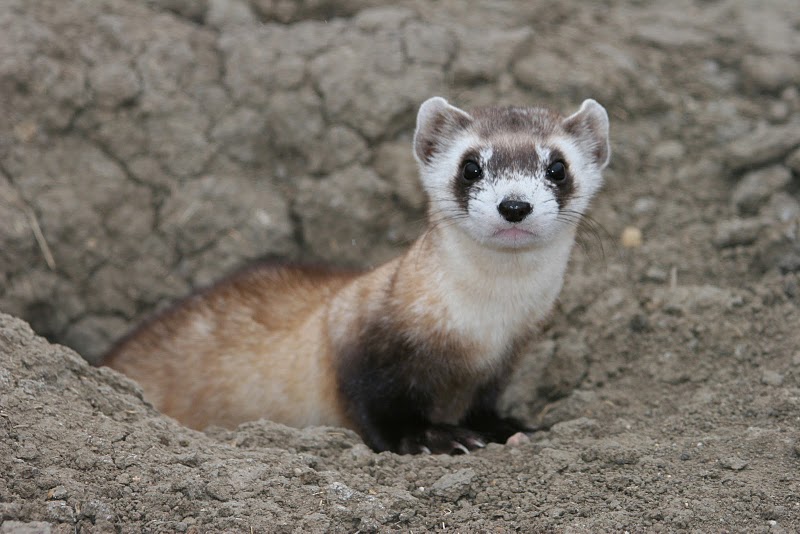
Black-footed Ferret